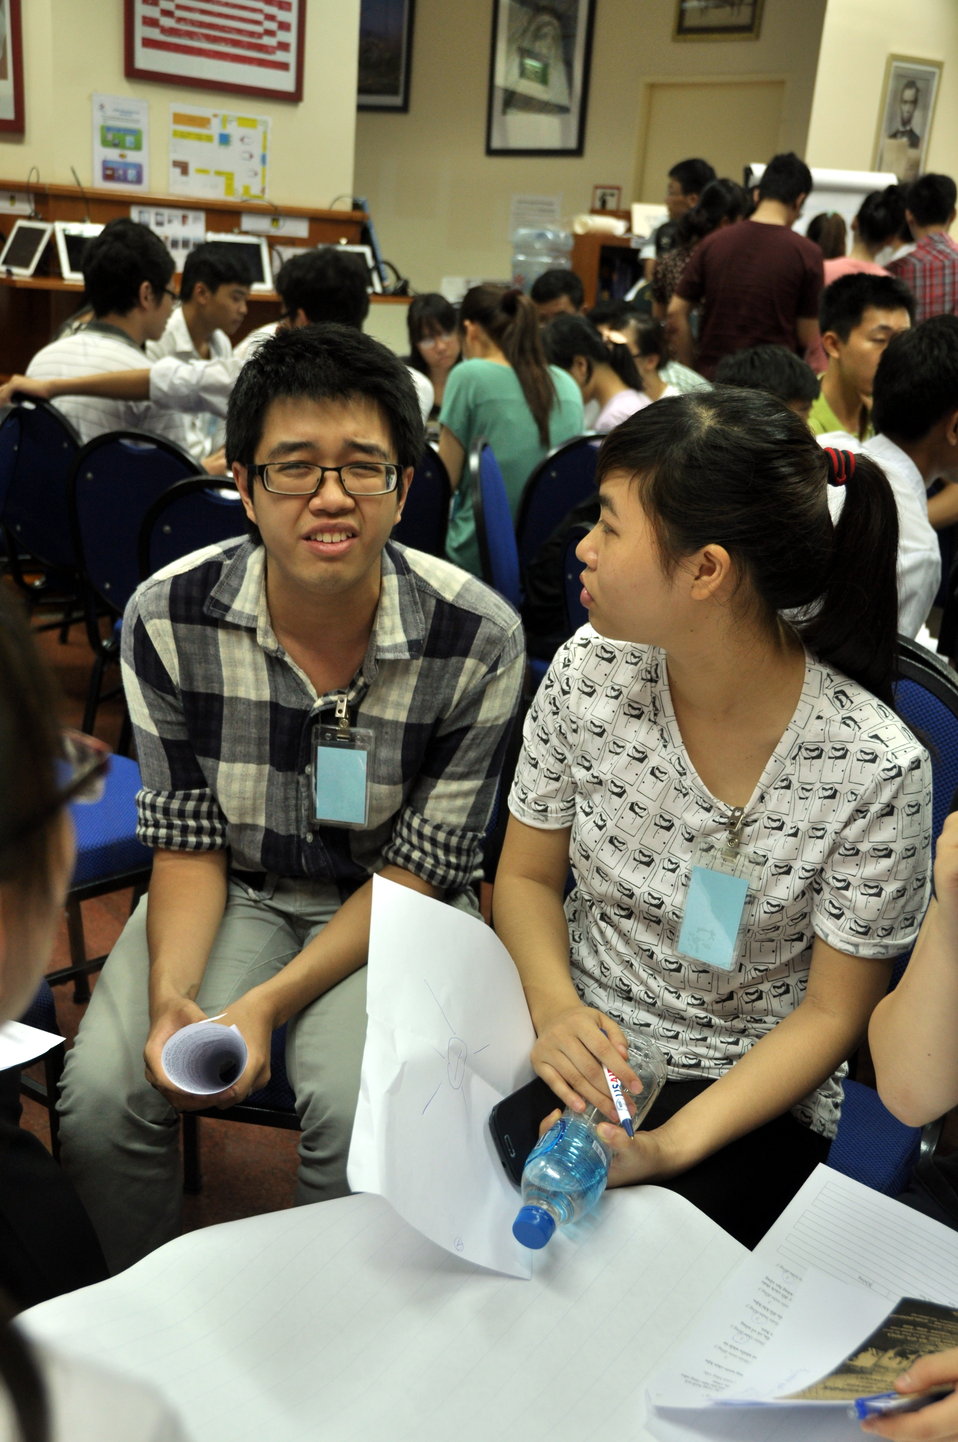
Climate Change Talk at the American Center

Hanoi, May 28, 2013.